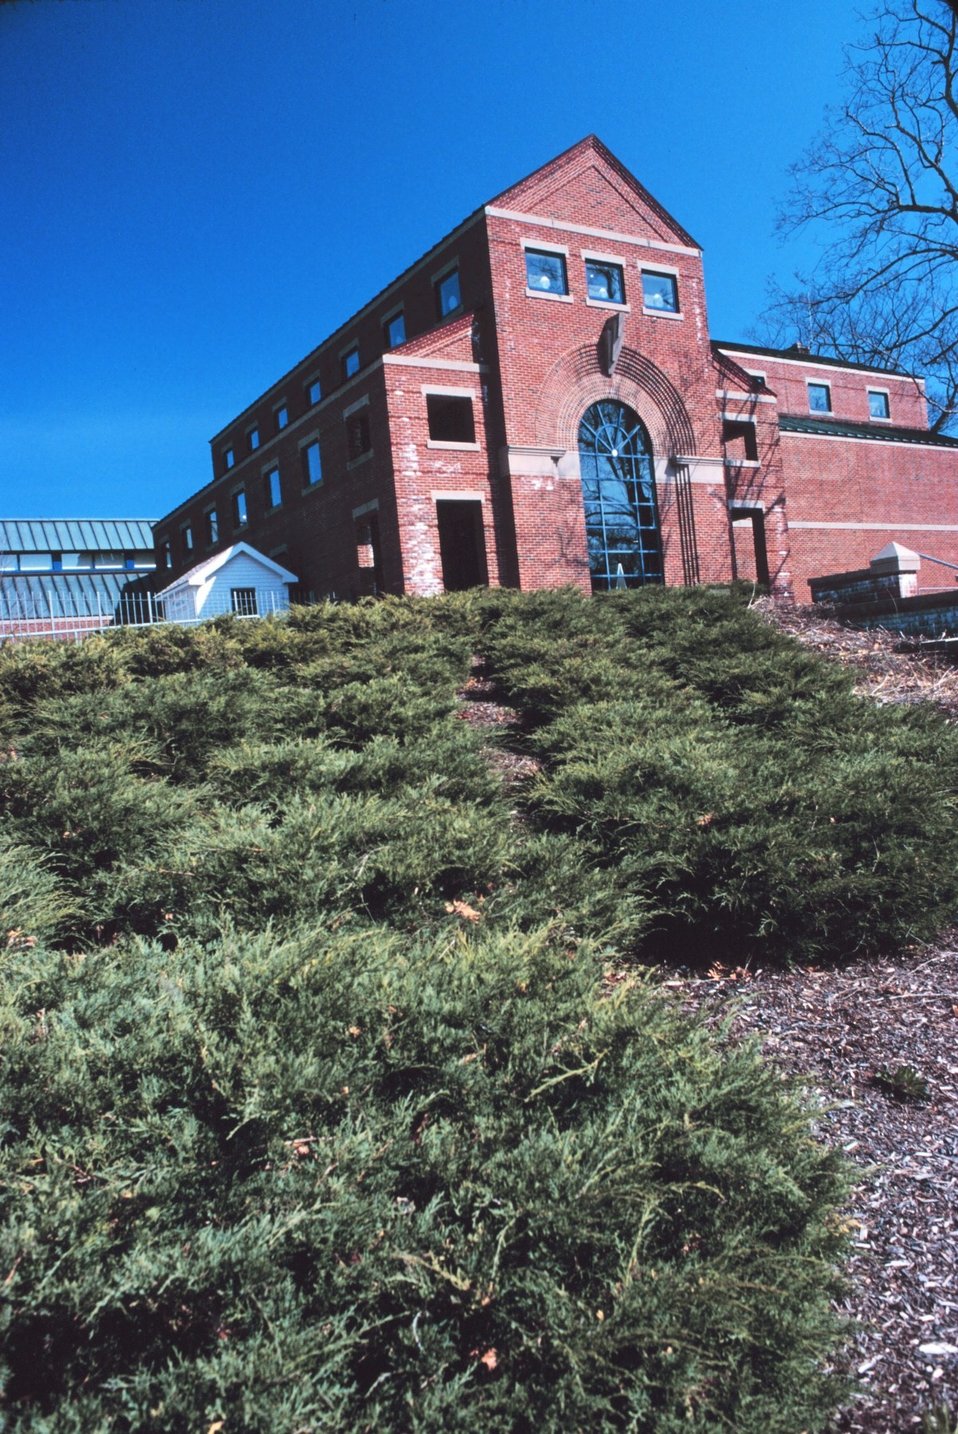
The Maine Maritime Museum